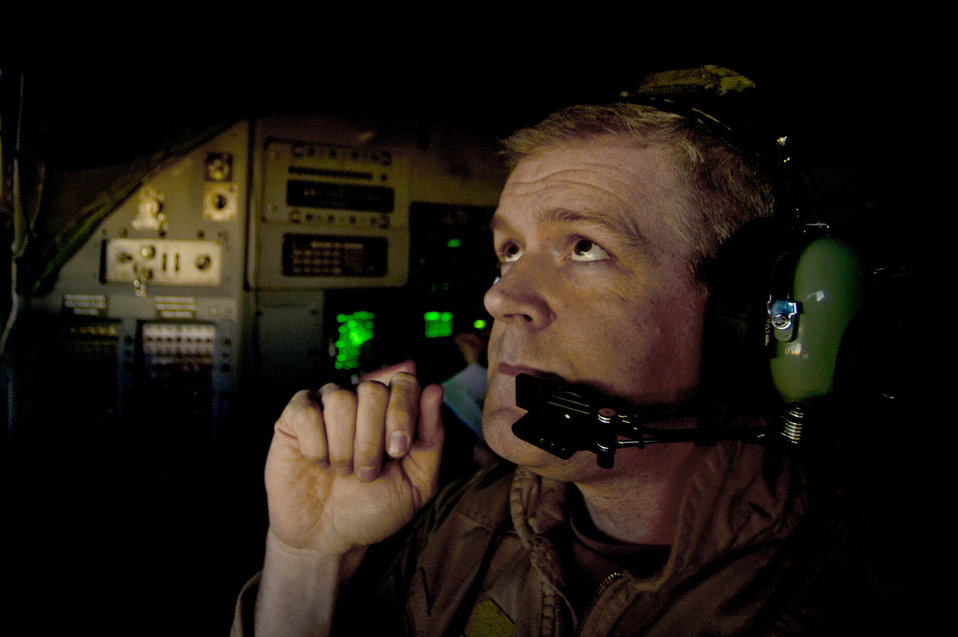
C-130 Aircrew

Senior Master Sgt. Christopher Janik performs his in-flight aircrew duties aboard a C-130 Hercules during an air transport mission in support of Operation New Dawn. Janik is a flight engineer assigned to the 746th Expeditionary Airlift Squadron. He is a reservist deployed from the 914th Airlift Wing in Niagara Falls, N.Y.